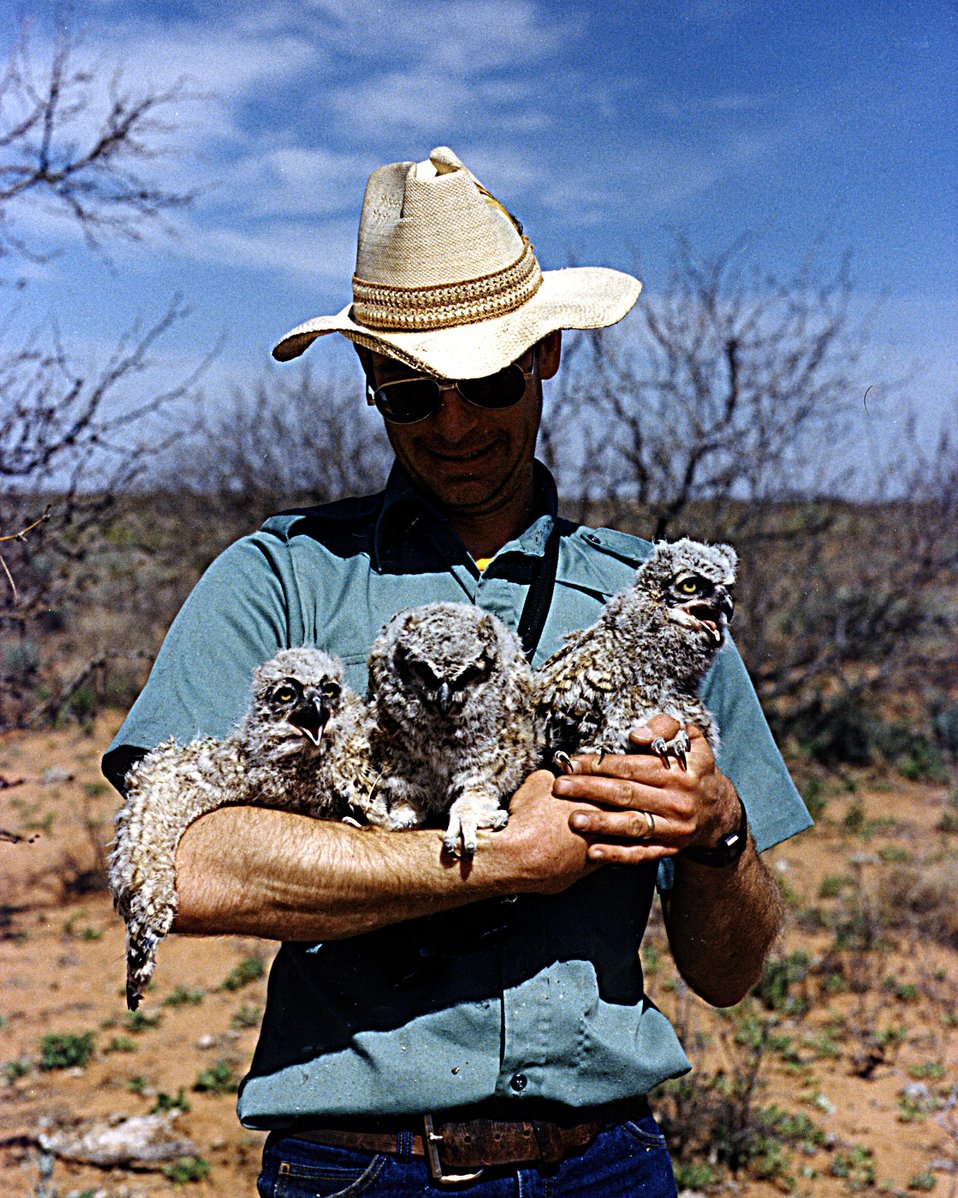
WIPP RAPTOR STUDIES - DR. BEDNARZ WITH BABY OWLS.

THE WASTE ISOLATION PILOT PLANT IS A DOE RESEARCH AND DEVELOPMENT FACILITY FOR DEMONSTRATING THE SAFE DISPOSAL OF TRANSURANIC RADIOACTIVE WASTE. FOUR VERTICAL SHAFTS CONNECT THE SURFACE FACILITIES TO THE UNDERGROUND. THE SHAFTS, ONE 21 FEET IN DIAMETER AND THE OTHERS 14 FEET IN DIAMETER, PROVIDE A MEANS OF TRANSPORTING THE WASTE, WORKERS, EQUIPMENT, MINED SALT, AND FRESH AIR FROM THE SURFACE TO THE UNDERGROUND SALT ROCK FORMATION THAT IS BEING TESTED TO DETERMINE SUITABILITY FOR RADIOACTIVE WASTE STORAGE. RADIOACTIVE BIN-SCALE TESTS ARE SCHEDULED TO BEGIN BEFORE THE END OF 1991.